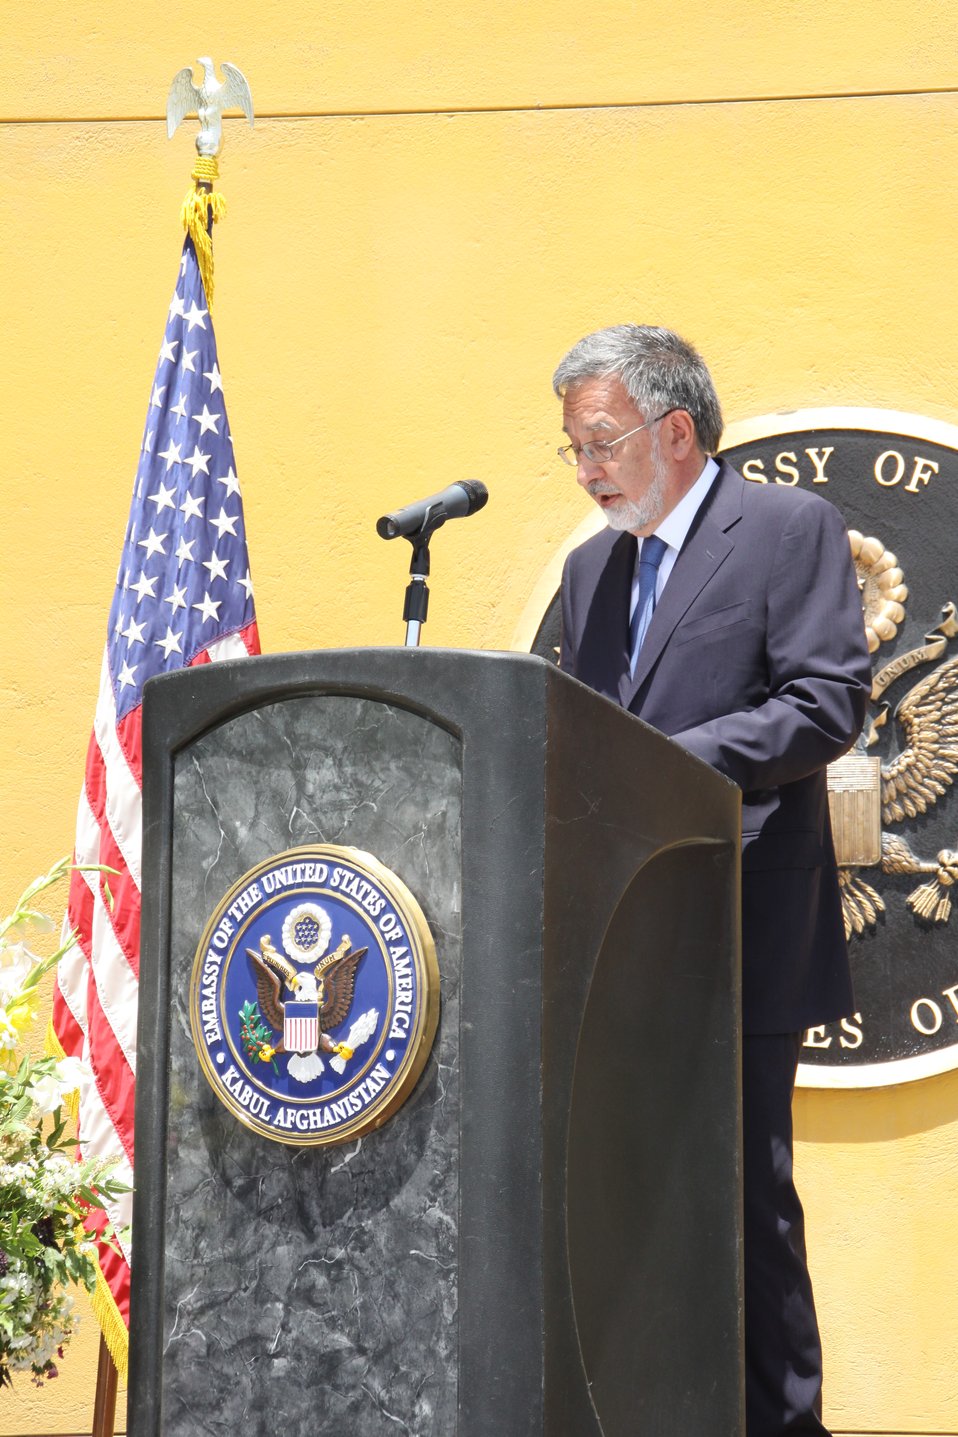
Kabul Official July 4th Celebration